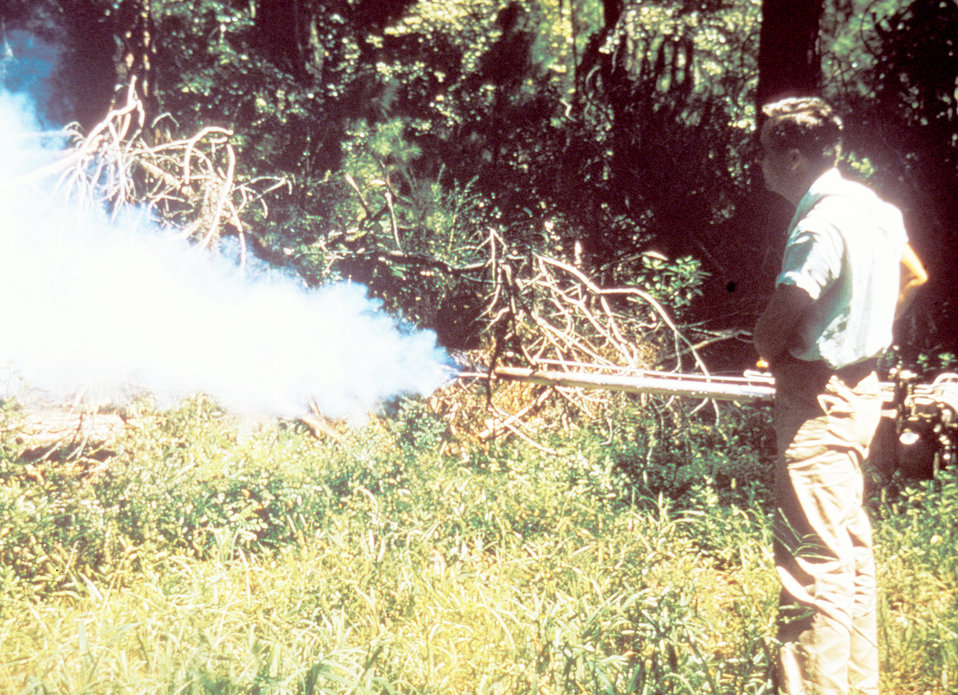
This field technician was using a 'swingfog' hand-held fog generator in an attempt to control populations of potential disease vectors by disseminating an insecticide fog into their outdoor habitat.